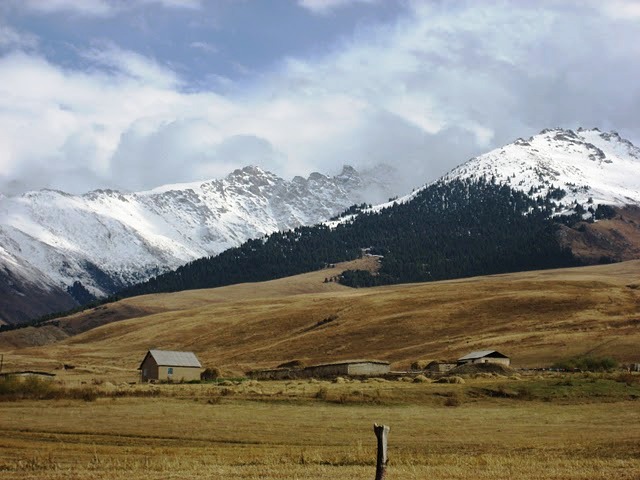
U.S. Embassy Bishkek Officers Travel Kyrgyzstan To Observe Elections

Foreign Service Officers from U.S. Embassy Bishkek travel Kyrgyzstan to observe polling stations and monitor the political and security situation in Kyrgyzstan in October 2010.